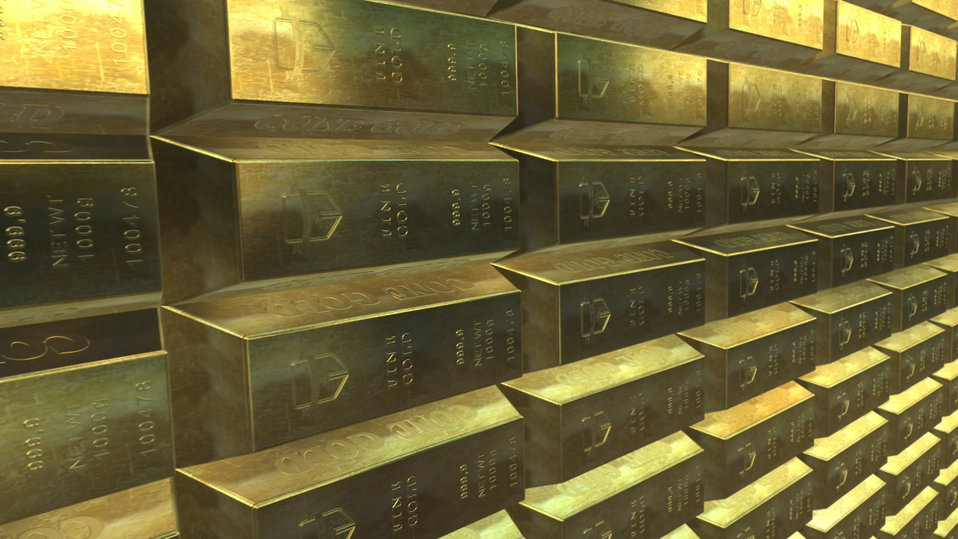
Gold bullion

Background of gold bars.